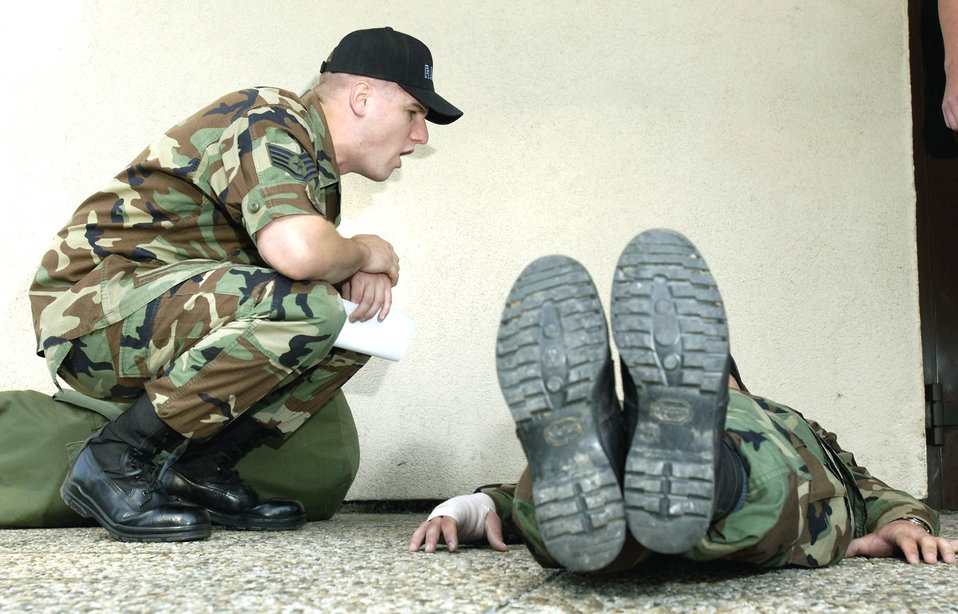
There's no quitting in the Air Force

0RAMSTEIN AIR BASE, Germany -- Staff Sgt. Mike Bowles asks a candidate who performs leg lifts why he is here during inprocessing at Ramstein's Area Motivational Program. This 30-day program is used by commanders to